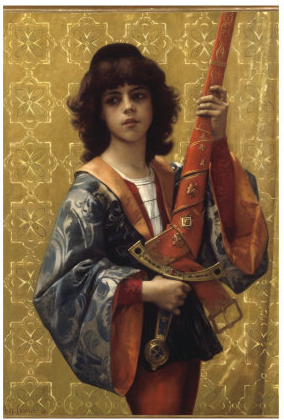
Alexandre Cabanel - page